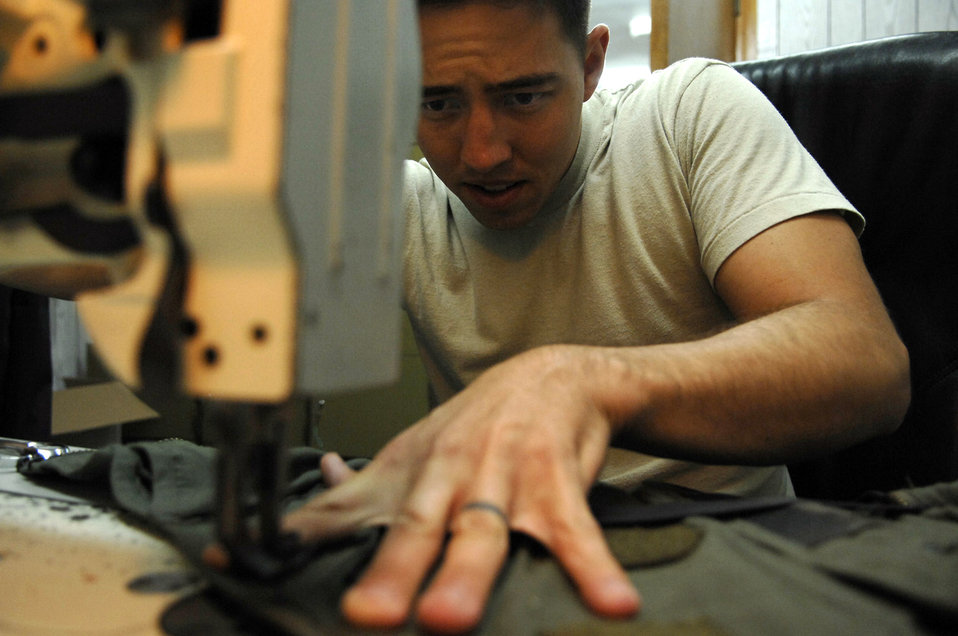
Airmen work to keep pilots safe

Senior Airman Nicholas Sanders sews a tear in an anti-G suit June 23 at Joint Base Balad, Iraq. The suit is worn by F-16 Fighting Falcon pilots to combat the gravitational forces experienced during high-speed maneuvers. The suit prevents blood from rushing out of the brain, helping the pilot to maintain consciousness during flight. The technicians are responsible for the maintenance and operability of all the F-16 pilot gear, including their helmets and survival equipment. Airman Sanders is a 77th Expeditionary Fighter Squadron aircraft equipment technician deployed from Shaw Air Force Base, S.C.